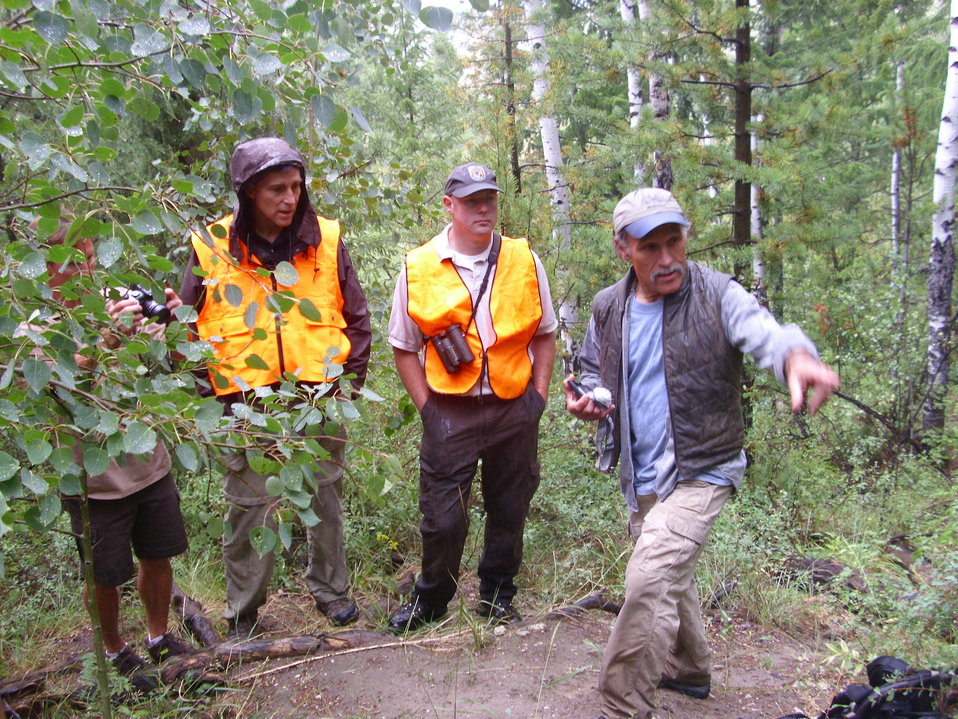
Hiking the Woods at National Elk

Wyoming Wolf Project Leader Mike Jimenez (right), National Elk Refuge Deputy Manager Paul Santavy (middle) and Dan (left) hike the woods at National Elk Refuge.